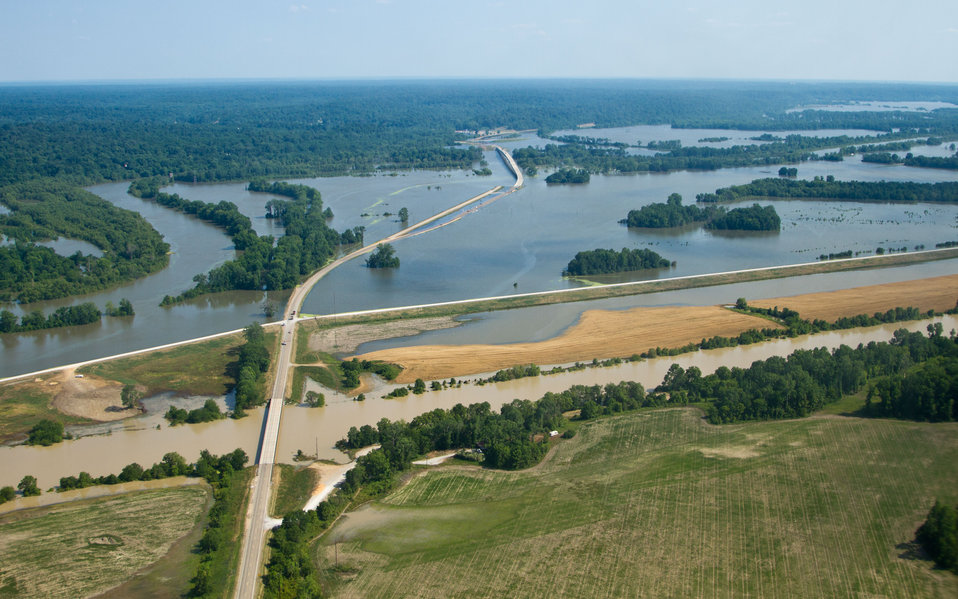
Aerial view of flooding of the Mississippi River, on Thursday, May 19, 2011 photographed from the MS side.